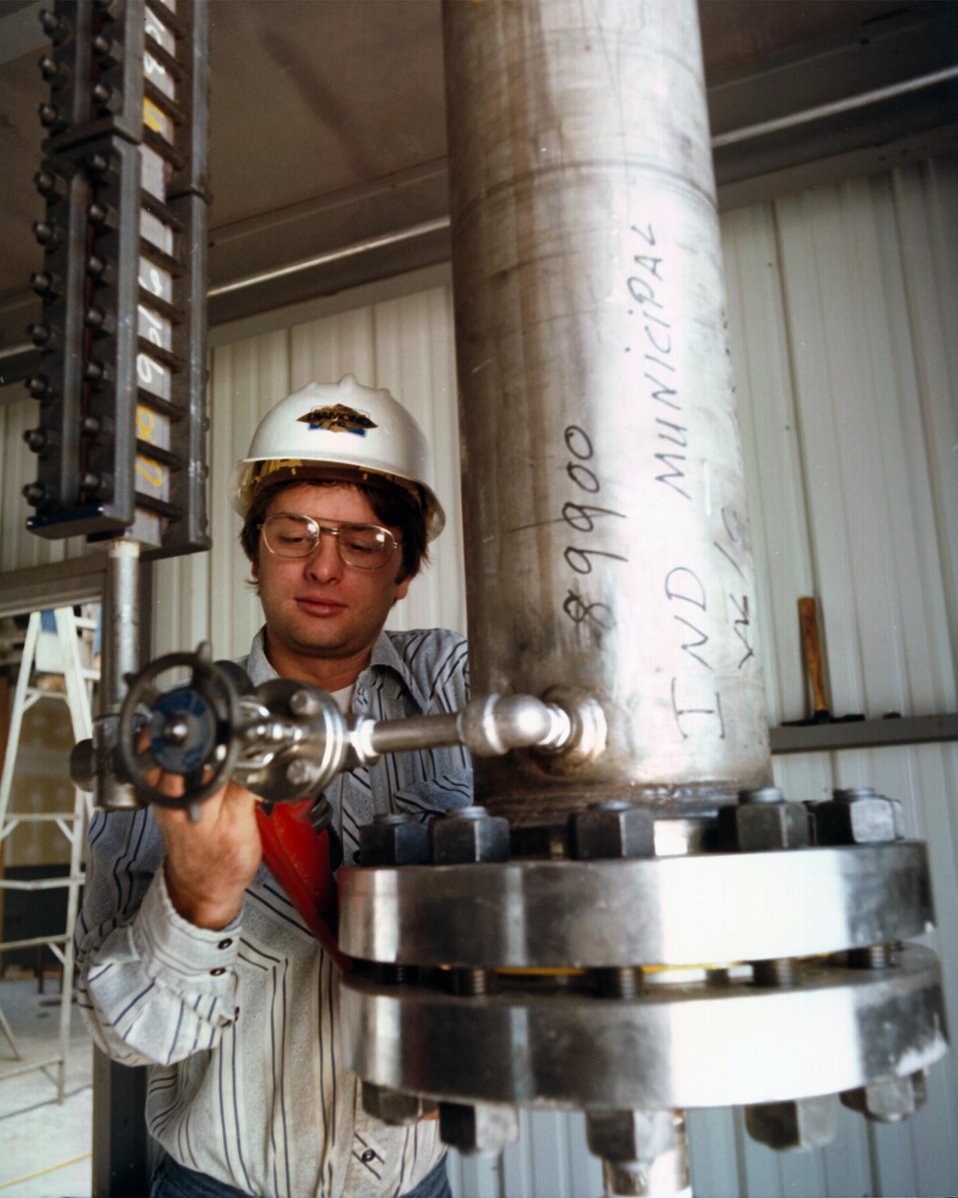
CRAFTSMAN WORKS ON THE LOWER PART OF THE REACTOR DURING CONSTRUCTION OF THE CATALYTIC COAL GASIFICATION UNIT.

THE CATALYTIC COAL GASIFICATION PROCESS IS BEING DEVELOPED IN A JOINT DOE/EXXON PROJECT AT EXXON'S RESEARCH FACILITIES IN BAYTOWN, TEXAS. UNLIKE OTHER COAL GASIFICATION PROCESSES WHICH RELY ON HIGH TEMPERATURES TO MAKE THE COAL REACT WITH STEAM, THE EXXON PROCESS USES A CHEMICAL CATALYST TO SPEED THE REACTION. THIS PROCESSING TECHNIQUE ELIMINATES THE NEED FOR OXYGEN, AN EXPENSIVE RAW MATERIAL NEEDED BY OTHER PRO- CESSES TO GENERATE THE NECESSARY HEAT. INSTEAD, THE HEAT RELEASED BY THE FORMATION OF THE SYNTHETIC GAS PROVIDES THE ENERGY FOR THE CARBON-STEAM REACTION. AN ADDITIONAL ADVANTAGE OF THE CATALYTIC PROCESS IS THAT THE GAS CAN BE RECYCLED CONTINUOUSLY UNTIL IT IS OF HIGH ENOUGH QUALITY TO BE INTRODUCED DIRECTLY INTO PIPELINES WITHOUT FURTHER UPGRADING. MINIMIZING THE DOWNSTREAM EQUIPMENT NEEDED BY OTHER PROCESSES TO MAKE THE GAS SUITABLE FOR PIPELINE TRANSPORT.